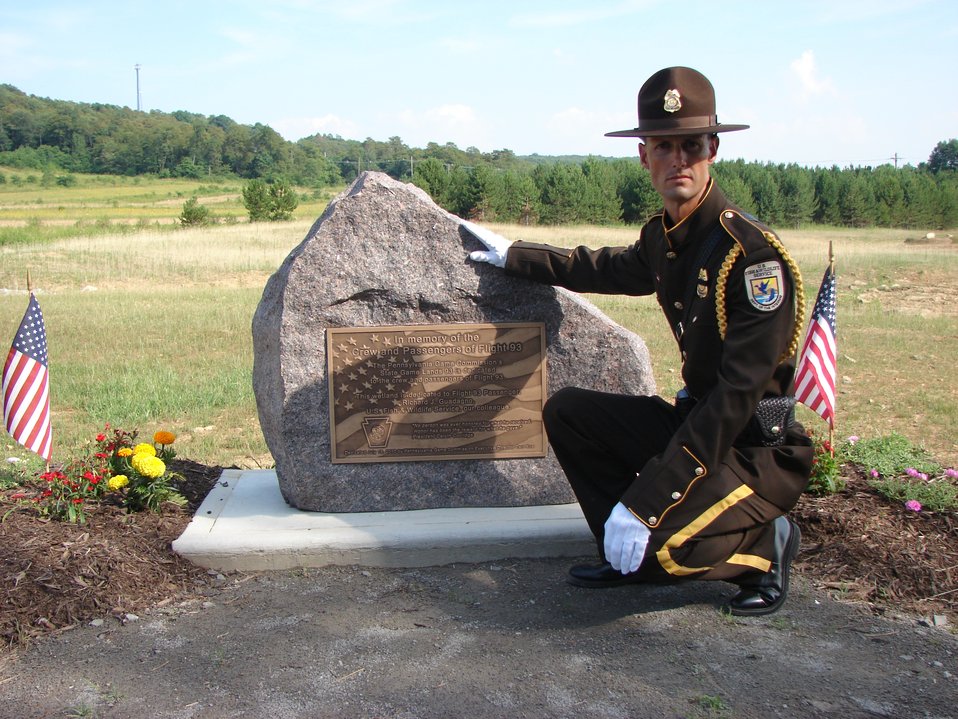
Officer Shelby Finney at memorial to Flight 93

As a member of the U.S. Fish and Wildlife Service Honor Guard, National Wildlife Refuge System Law Enforcement Officer Shelby Finney helped dedicate a Pennsylvania memorial to passengers of Flight 93, killed by terrorists on September 11. Finney, based at Salt Plains National Wildlife Refuge in Oklahoma, was named 2011 Officer of the Year for the U.S. Fish and Wildlife Service’s Southwest Region. (USFWS)